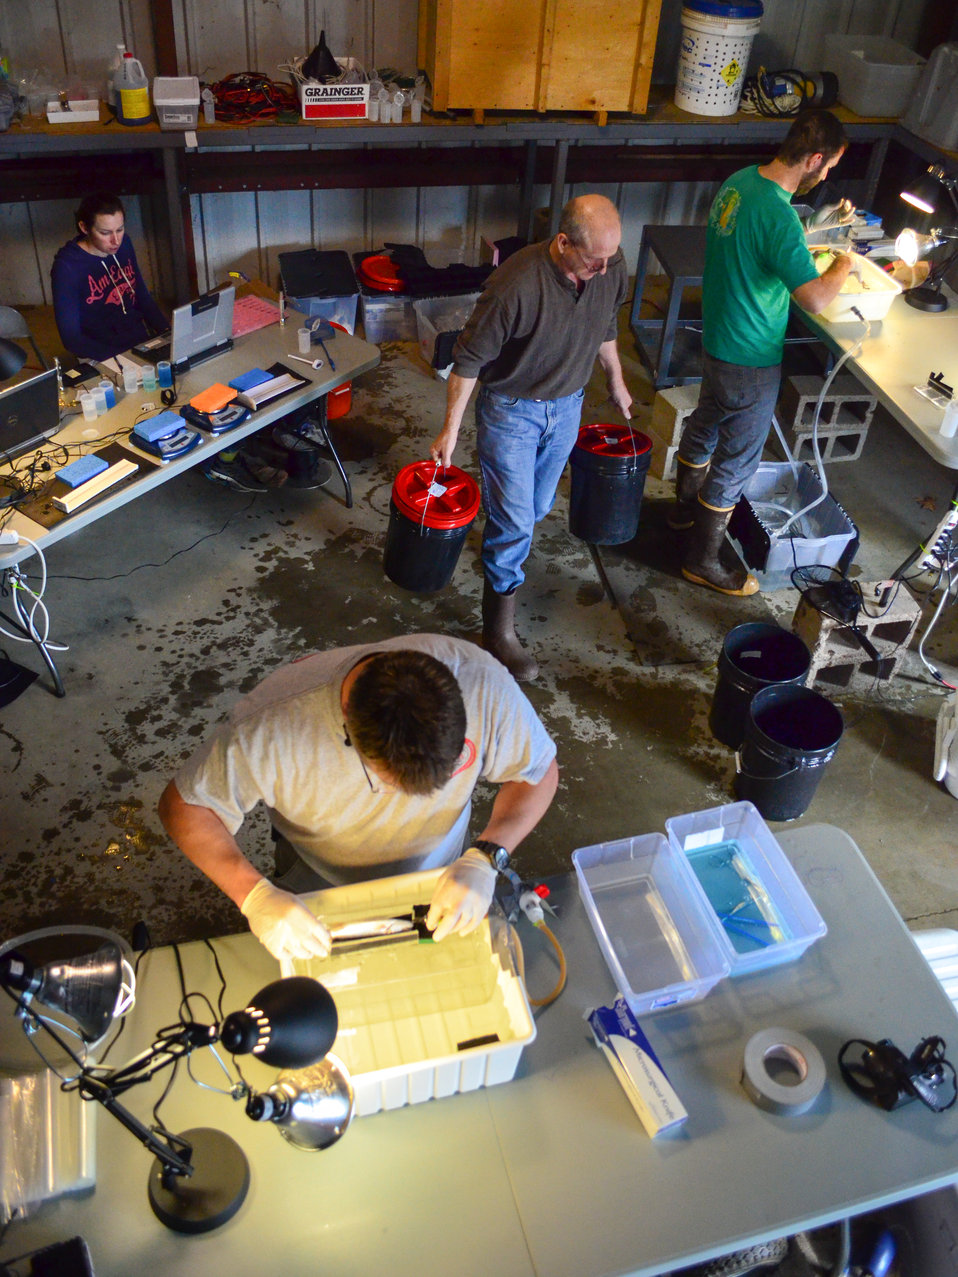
Bird's eye view of the fish-tagging operation

Ecologists for the U.S. Army Corps of Engineers Sacramento District begin tagging 50 steelhead trout and 200 late-fall Chinook salmon smelt at the Coleman National Fish Hatchery in Anderson, Calif. on March 25, 2013. The fish-behavior data obtained over a 75-mile stretch of the Sacramento River will help researchers better evaluate habitat restoration work under the Sacramento River Bank Protection Project, a joint flood risk reduction effort between the district and the state's California Central Valley Flood Protection Board to repair riverbank erosion along the Sacramento River and its tributaries.